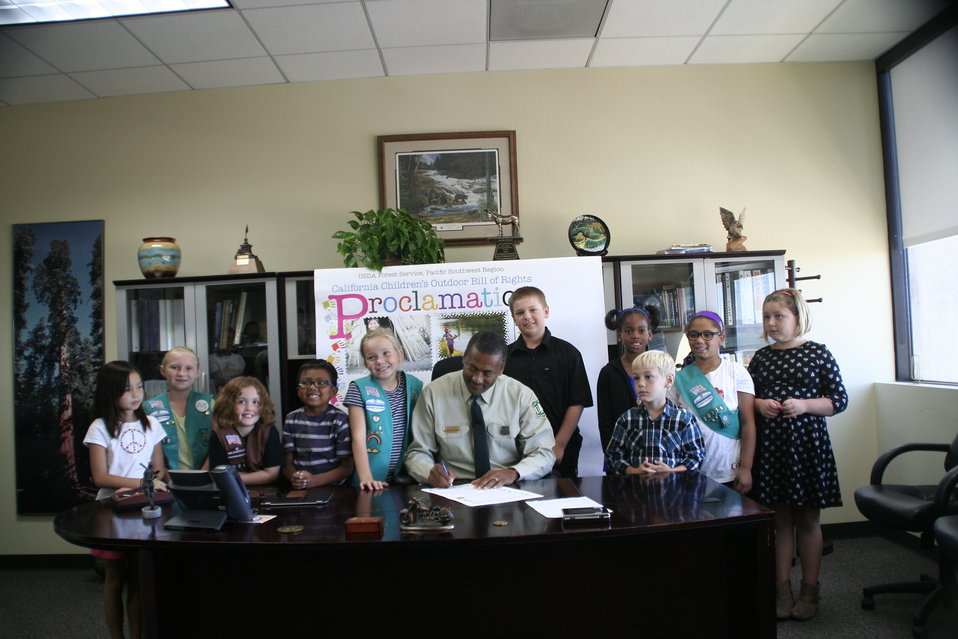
Childrens Bill of Rights

Children gather around U.S. Department of Agriculture (USDA) U.S. Forest Service Pacific Southwest Regional Forester Randy Moore’s desk as Moore signed a proclamation endorsing the California Children’s Outdoor Bill of Rights. The Pacific Southwest Region supports the Children’s Bill of Rights, which encourages children to experience outdoor activities. (.S. Forest Service photo byMario Chocooj.